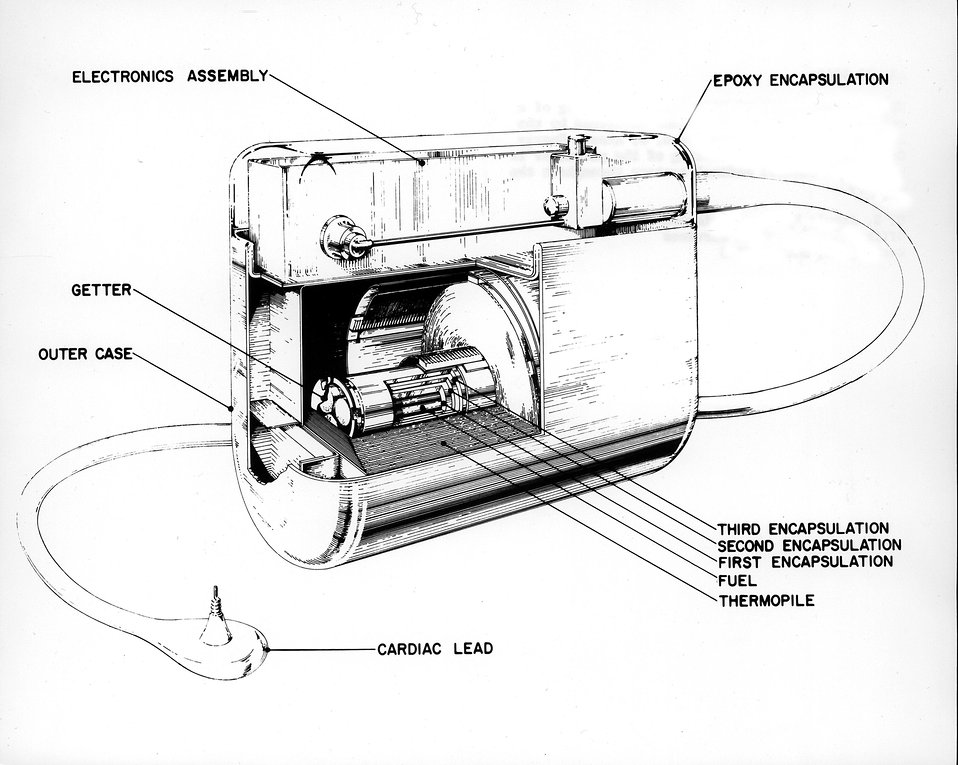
A drawing of a nuclear-powered heart pacemaker developed by the ARCO Nuclear Company for the U.S. Atomic Energy Commission. Circa 1973.